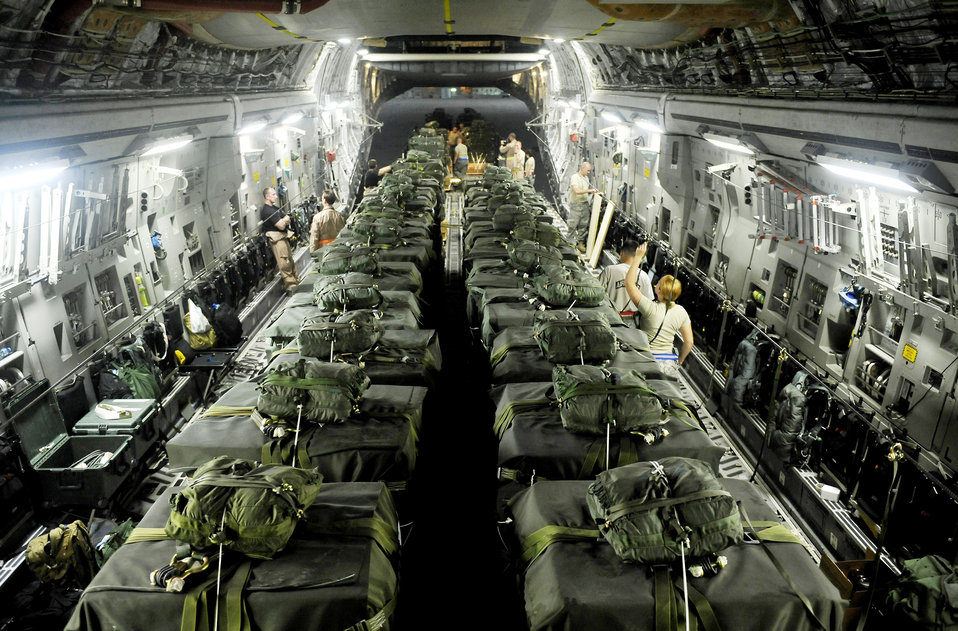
Mobility Airmen continue to deliver for warfighters

Servicemembers load a C-17 Globemaster III with container delivery system bundles Sept. 23, 2009, at an air base in Southwest Asia. More than 4.1 million pounds of supplies were airdropped by the Air Force in the month of September.